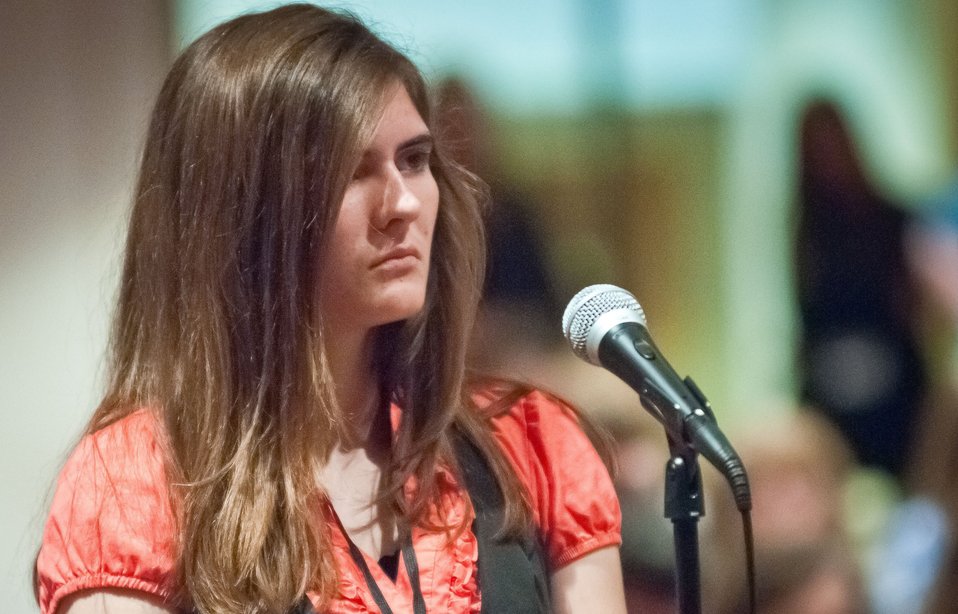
Kansas State University student Jill Seiler listens to Agriculture Secretary Tom Vilsack's answer to her question at the National 4-H Youth Center in Chevy Chase, MD, on Monday, March 26, 2012. 'For almost 100 years, USDA and 4-H have partnered to produce some of our nation's best and brightest, including farmers and ranchers who have supported the American economy and put food on our tables,' Vilsack said. 'You all are tomorrow's leaders. We need you to think big, innovate and help tackle the important challenges standing between us, a stronger middle class and a stronger nation.'